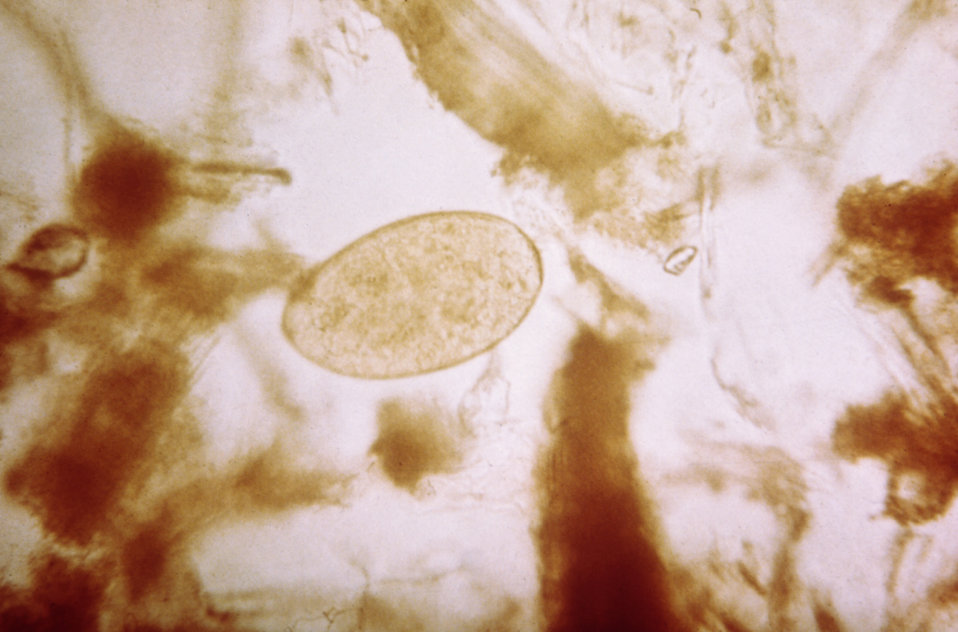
This micrograph depicts an egg of the trematode Fasciola hepatica, or the sheep liver fluke.